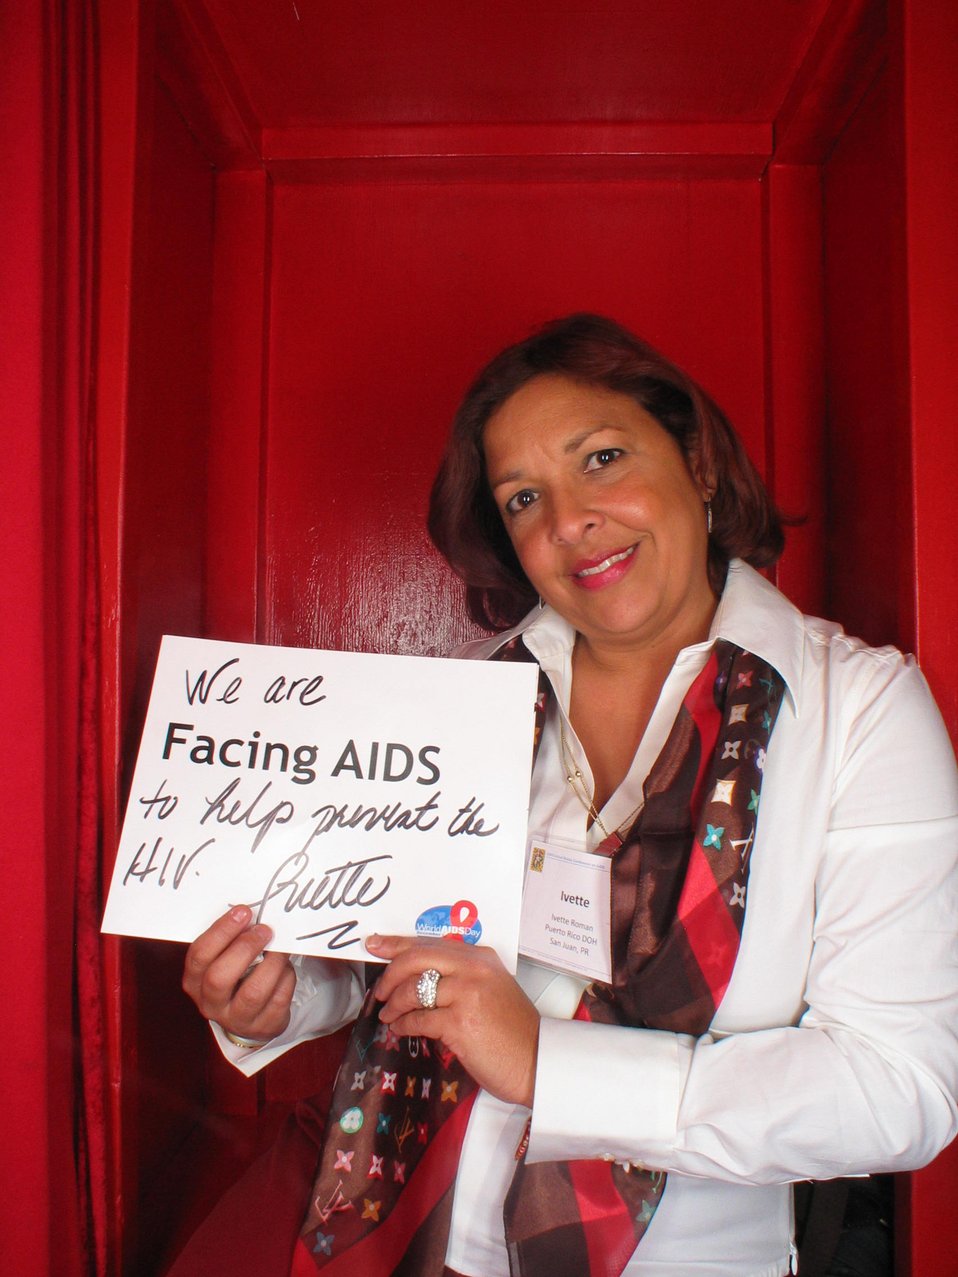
We are Facing AIDS to help...